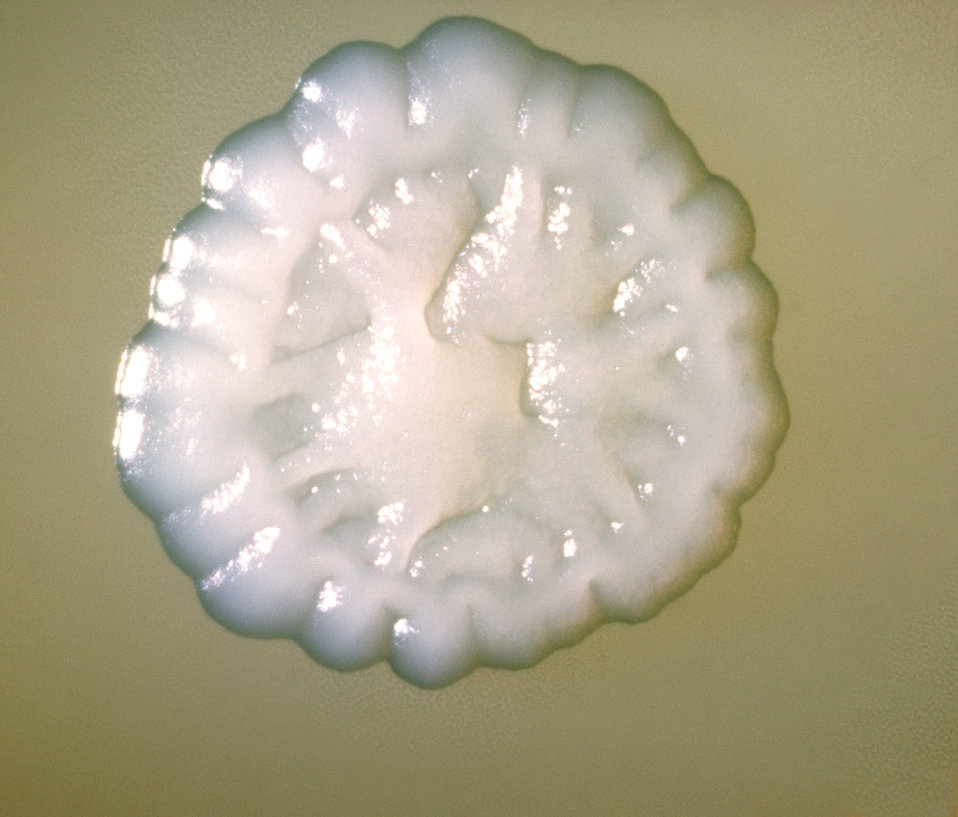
A BHI plate culture of Actinomyces sp., strain- X616, at 72hrs of growth.